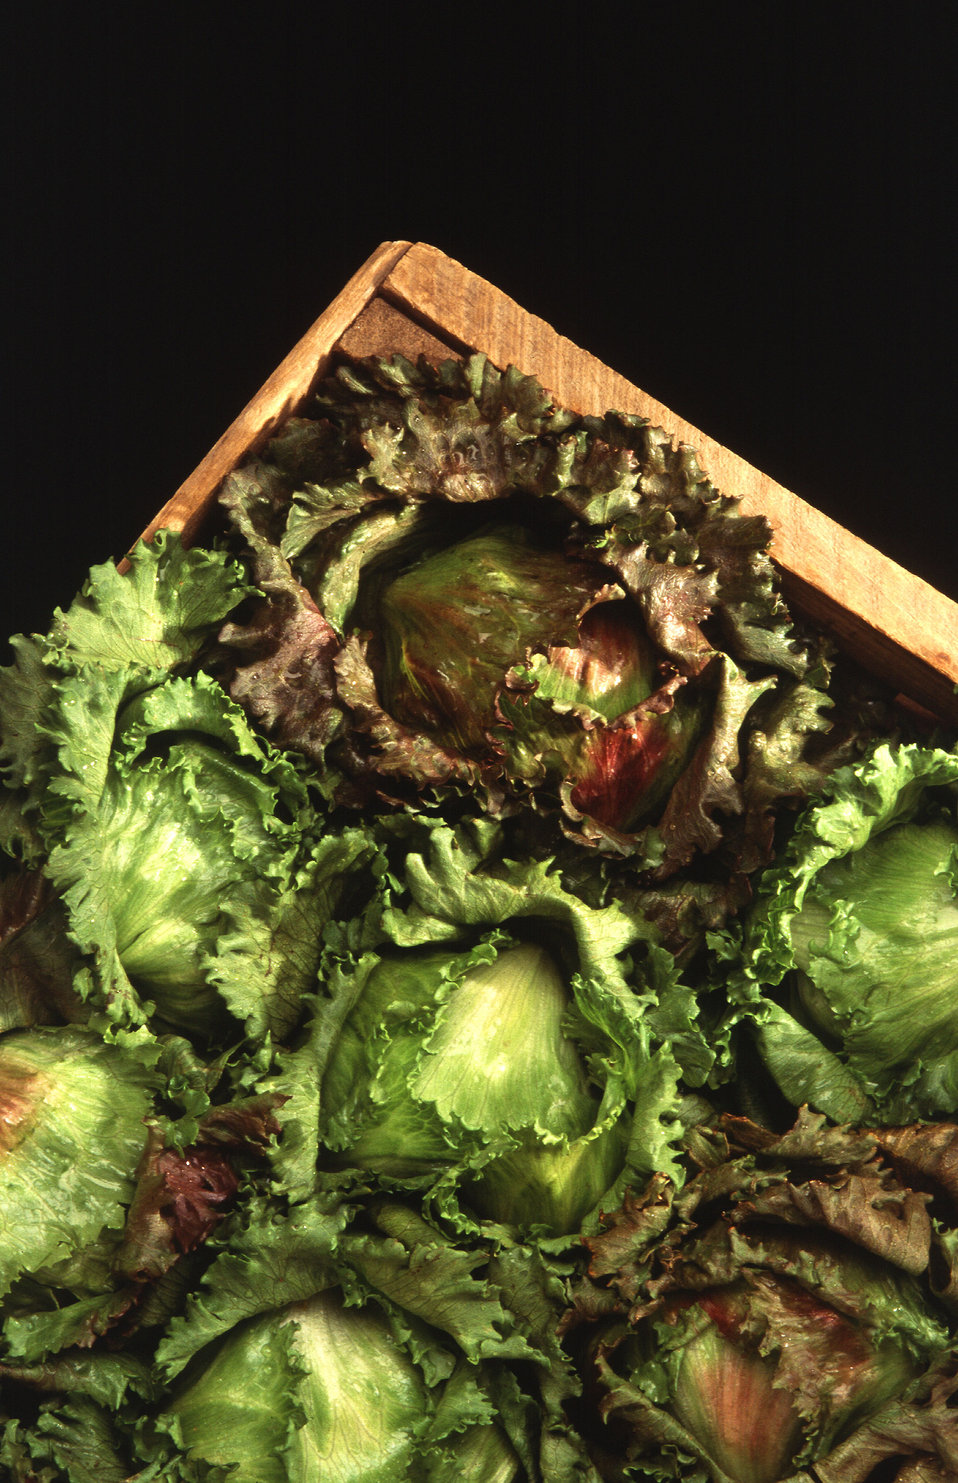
Nearly every head of iceberg lettuce you'll find in a supermarket owes its parentage to the work of U.S. Department of Agriculture’s (USDA) Agricultural Research Service (ARS) plant breeders. Salinas iceberg lettuce and its progeny are the most widely planted iceberg lettuces in the Salinas Valley of California, the world's foremost lettuce-growing region. Farmers in other parts of the U.S. and foreign countries from Sweden to Australia also raise these lettuces. An inventive USDA ARS plant breeder devised an iceberg mini-lettuce that makes just enough salad for one person to eat at one sitting. Lettuce breeders rely on the USDA ARS gene bank, which houses seeds of more than 2,000 lettuce types. The genes that are banked there today should result in lots more lettuce-magic soon. Look for traits like the warm gold of a Hungarian lettuce or the intense crimson of a Spanish variety to be introduced into the familiar lettuces that are grown in the U.S. today.